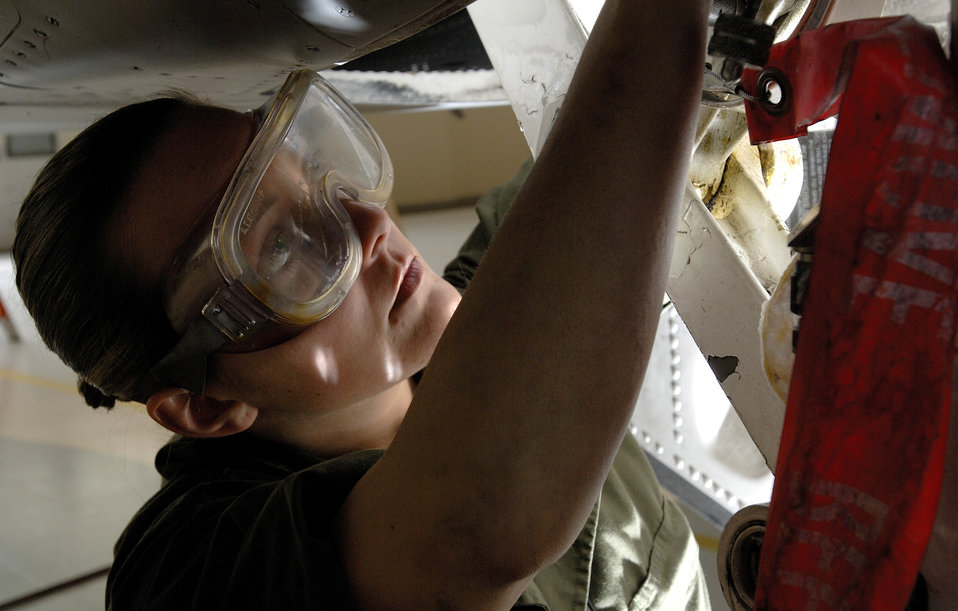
F-15 preventive maintenance

Senior Airman Elizabeth Harding inspects the landing gear on an F-15 Eagle Tuesday, March 14, 2006, at Langley Air Force Base, Va. Airman Harding is with the 71st Aircraft Maintenance Unit.